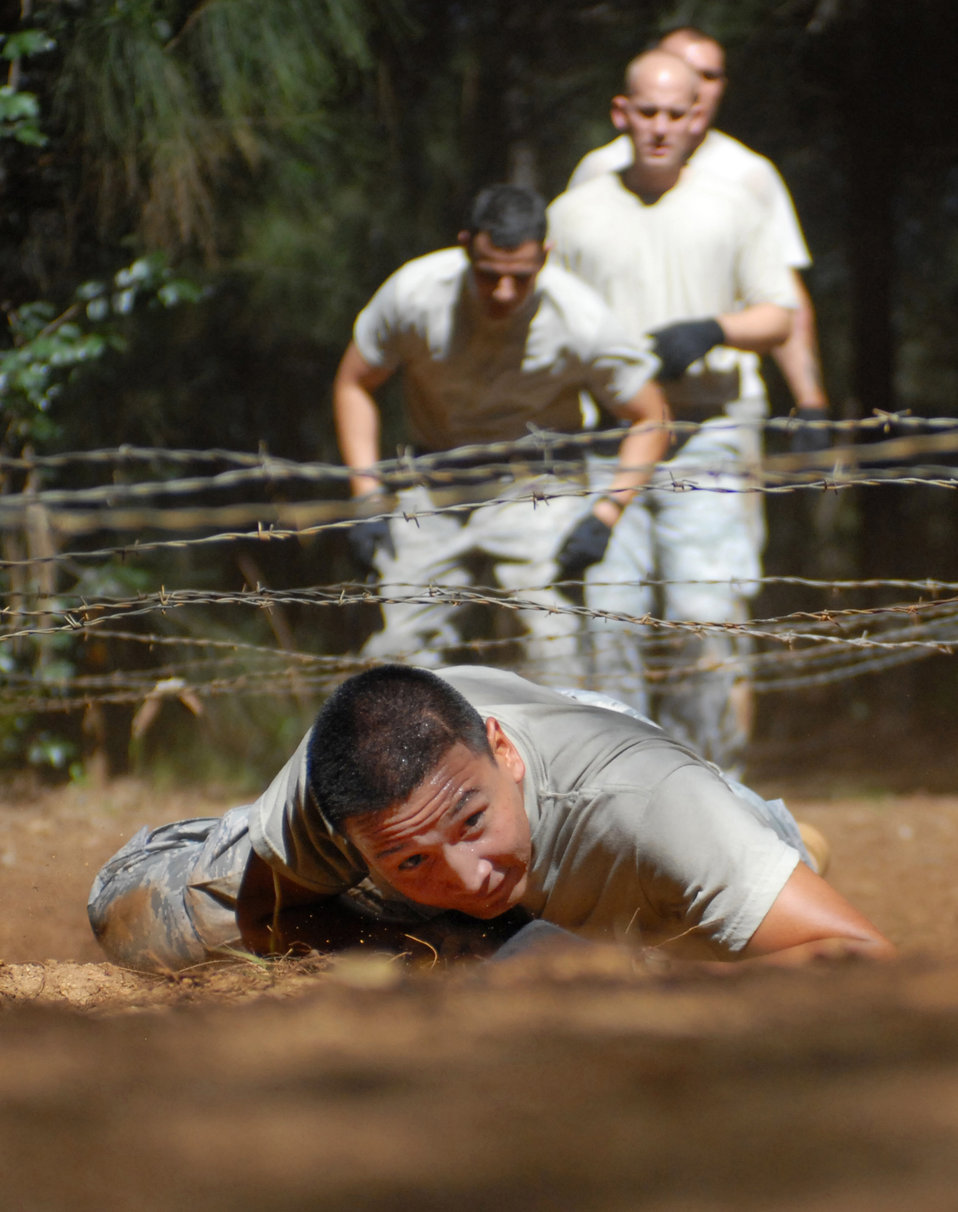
Watch your head

Senior Airman Anthony Elizondo low crawls under barbed wire as part of an obstacle course Feb. 1, 2011, in Wahiawa, Hawaii. Airman Elizondo is assigned to the 647th Security Forces Squadron at Joint Base Pearl Harbor-Hickam, Hawaii.